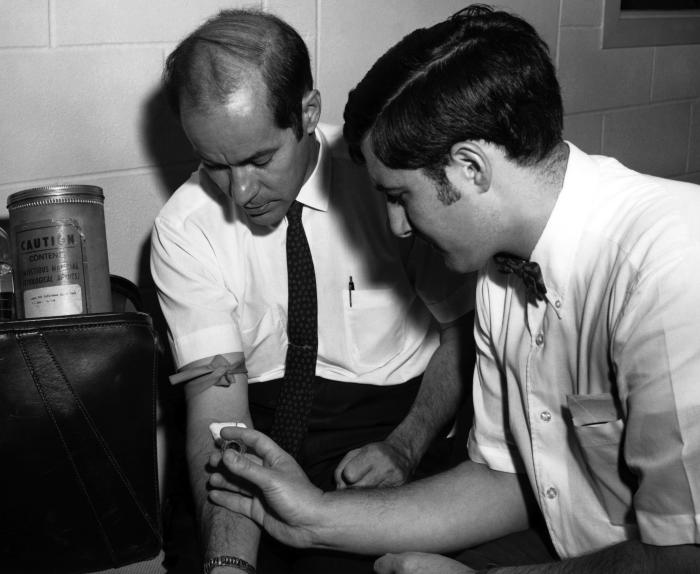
Dr. Steven R. Mostow (right), formerly as Medical Officer with the Respiratory Virus Infections Unit at the Centers for Disease Control, was shown here collecting blood to be used for comparison with blood, which would be acquired at a later time, in order to test for the possible presence of antibodies against the influenza virus.